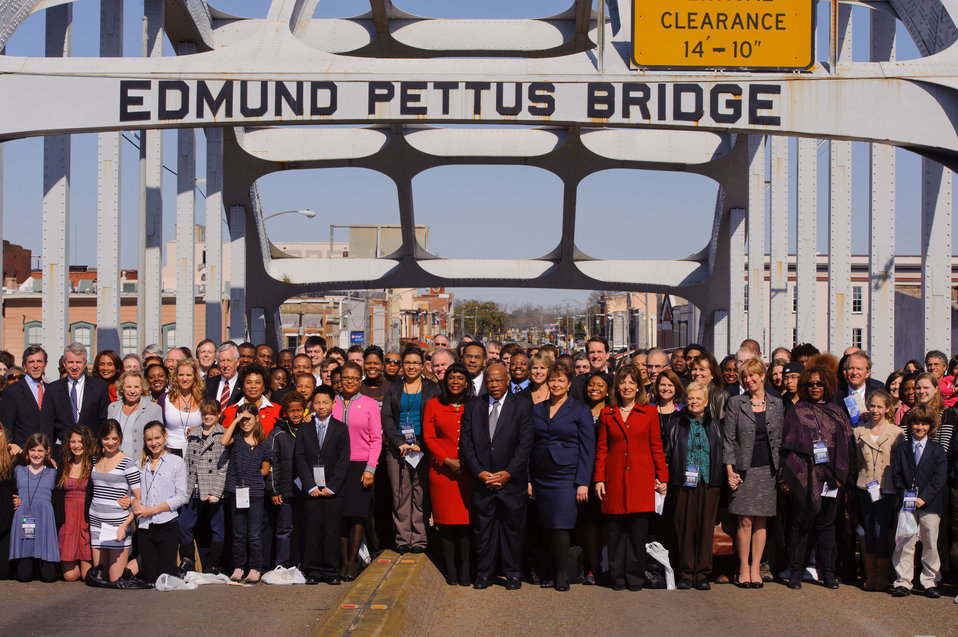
March 4, 2012 Administrator Jackson and community leaders complete the crossing of the Edmund Pettus Bridge in Selma, Alabama

Historic Places of the Civil Rights Movement:
Selma to Montgomery March